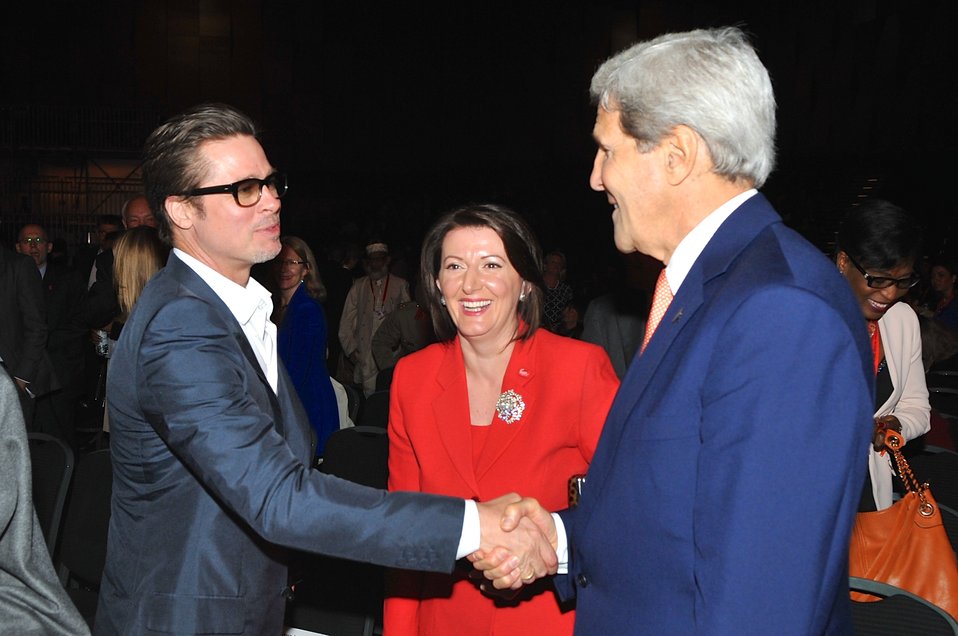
Actor Pitt Greets Secretary Kerry at Conclusion of 2014 Global Summit to End Sexual Violence in Conflict

U.S Secretary of State John Kerry shakes hands with actor Brad Pitt at the conclusion of the 2014 Global Summit to End Sexual Violence in Conflict - headlined by Pitt's fiancee, actress and UN Envoy Angelina Jolie - in London on June 13, 2014.